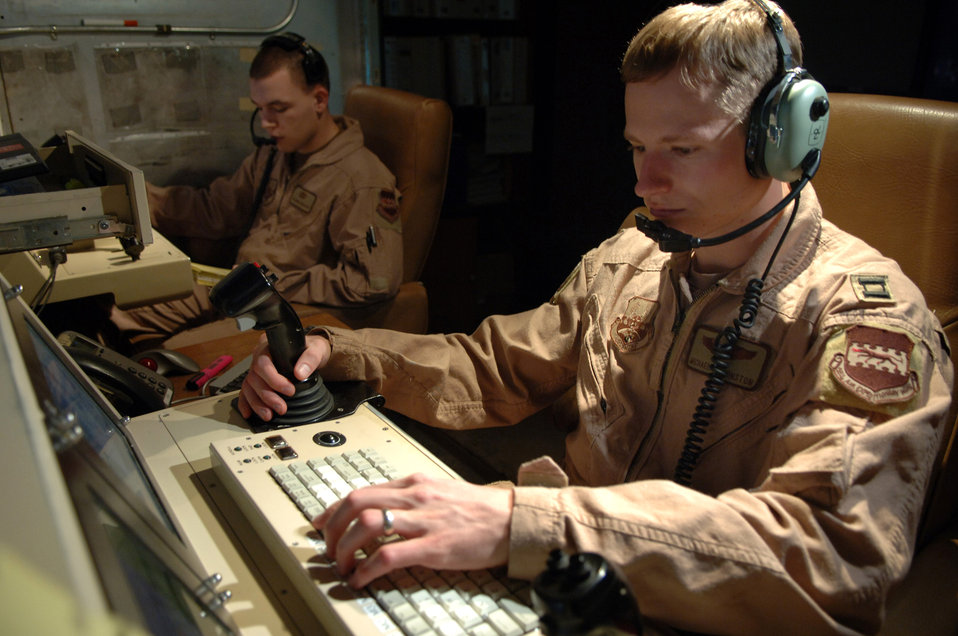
Silent eye in the sky: Predators keep constant vigil

Capt. Mike Edmonston and Airman 1st Class Shawn Weigman perform the descent and arrival checklist Jan. 31 at Balad Air Base, Iraq. Captain Edmonston is a 46th Expeditionary Reconnaissance Squadron MQ-1 Predator Unmanned Aerial Vehicle pilot, and Airman Weigman is the Predator sensor operator